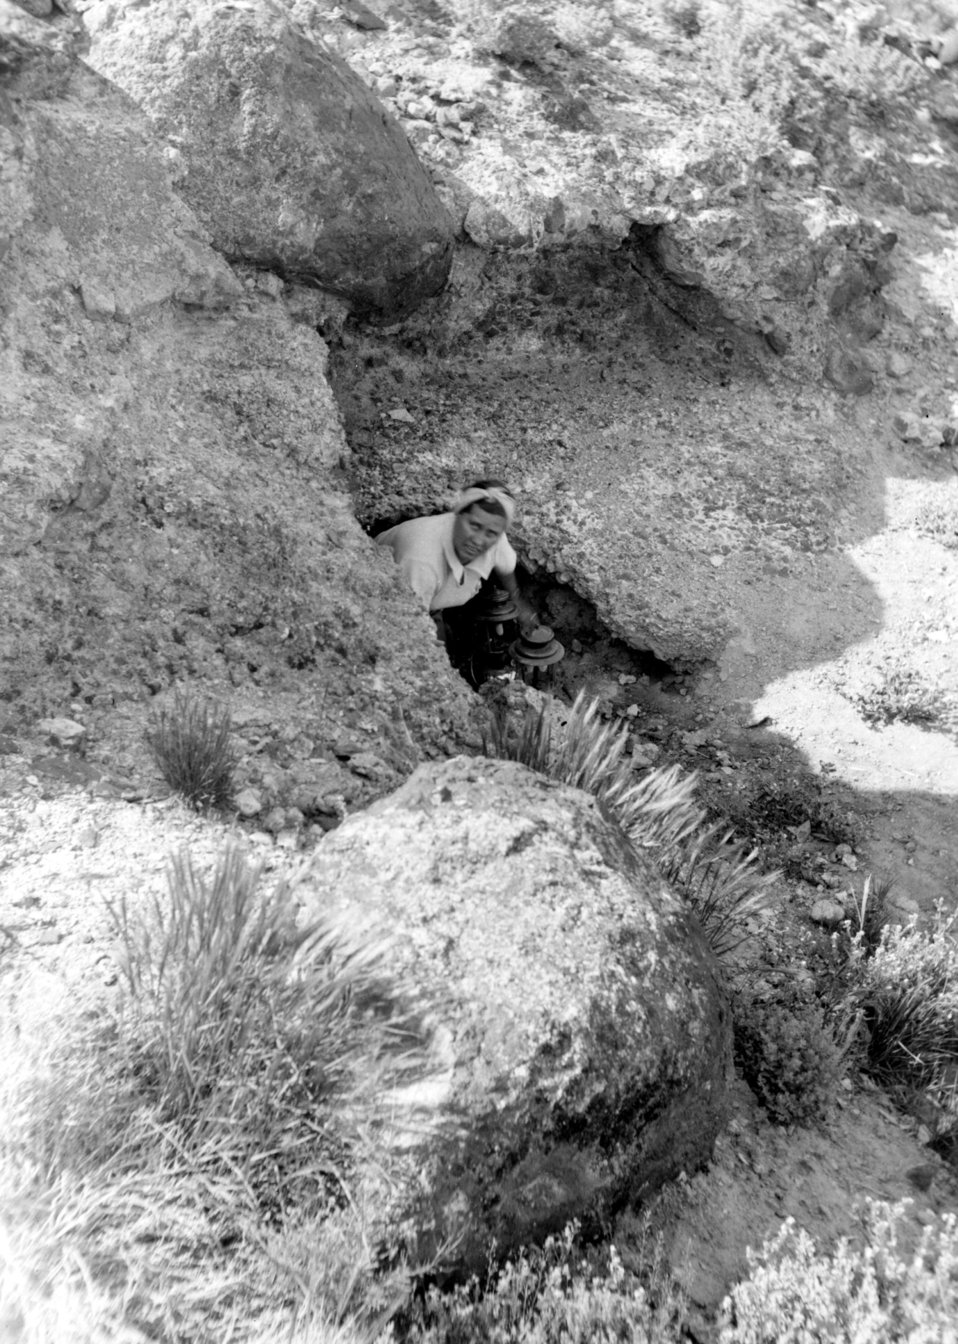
Original entrance to Hidden Cave